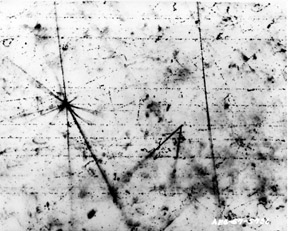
Photographic plate, or emulsion, exposed to billion-volt protons produced by the Cosmotron at Brookhaven National Laboratory. c. 1957